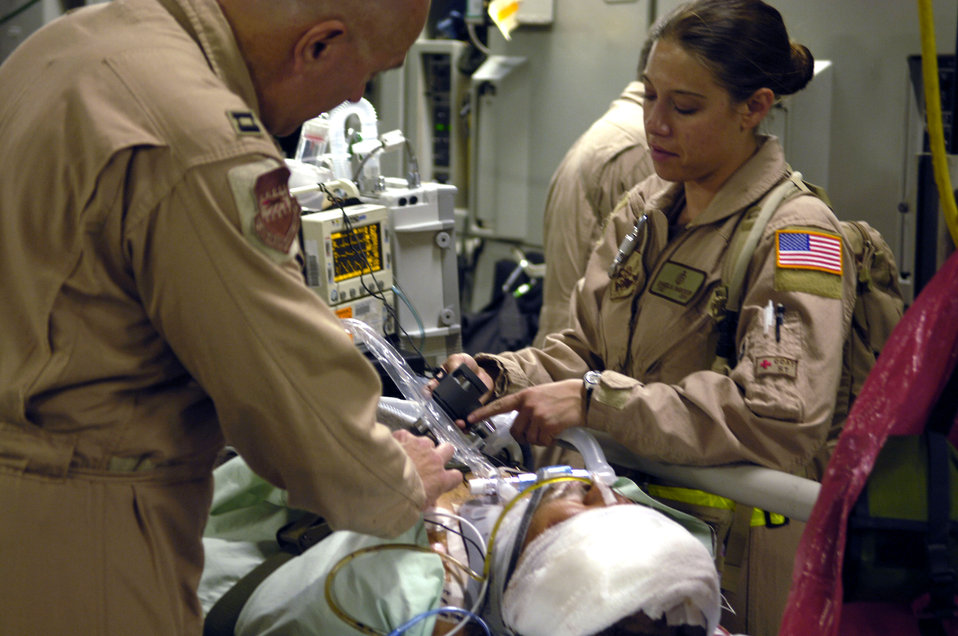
The best care in the air

Capt. Gary Novak and Tech. Sgt. Daniela Rabickow prepare a patient about to be aeromedically evacuated from Balad Air Base, Iraq, aboard a C-17 Globemaster III on Friday, June 9, 2006. Captain Novak and Sergeant Rabickow are assigned to the 332nd Expeditionary Operations Support Squadron aeromedical evacuation flight.